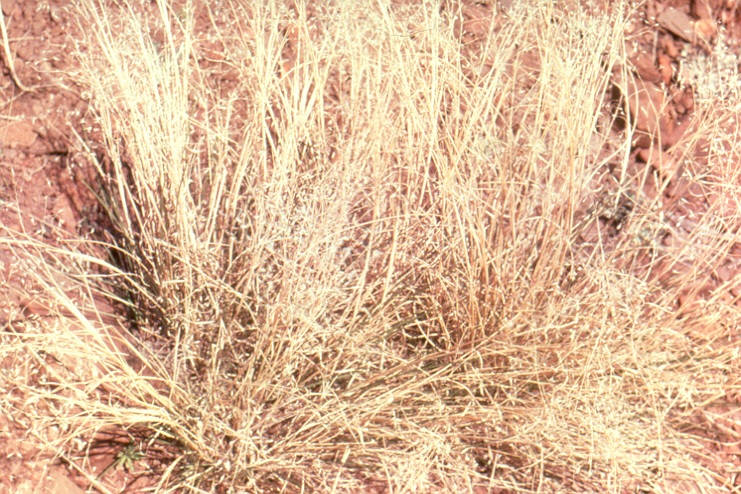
Indian Rice Grass Salmon FIeld Office UCSC Upper Columbia Salmon Clearwater District